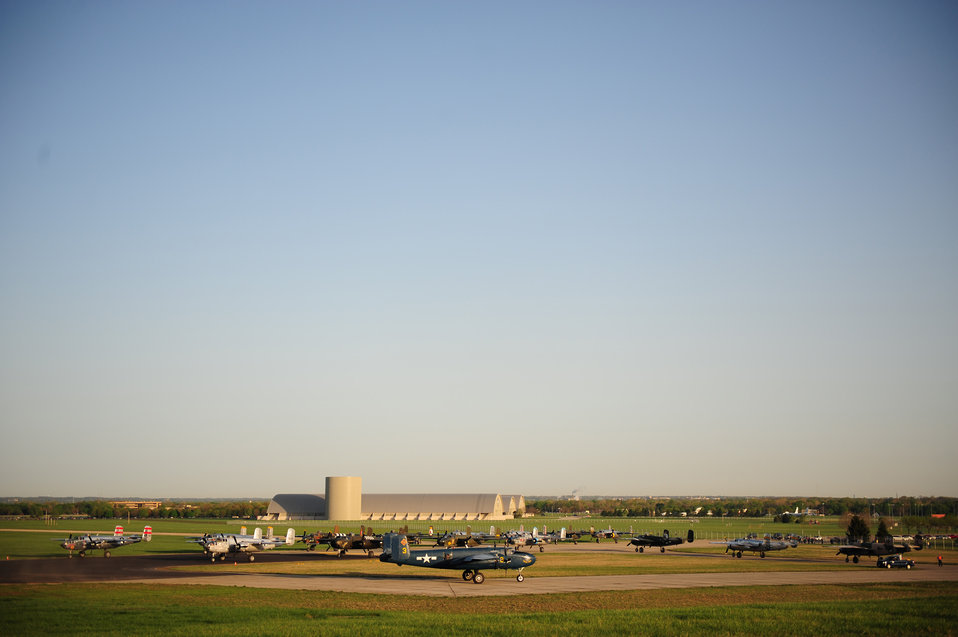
68th Doolittle Raiders Reunion

Vintage B-25 Mitchell aircraft arrive at the National Museum of the U.S. Air Force at Wright Patterson Air Force Base, Ohio, to take part in events honoring the 68th Doolittle Raiders' reunion, April 17, 2010. The event commemorates the anniversary of the Doolittle Tokyo Raid when on April 18, 1942, U.S. Army Air Forces Lt. Col. Jimmy Doolittle's squad of 16 B-25s bombed targets in response to the Japanese attack on Pearl Harbor.